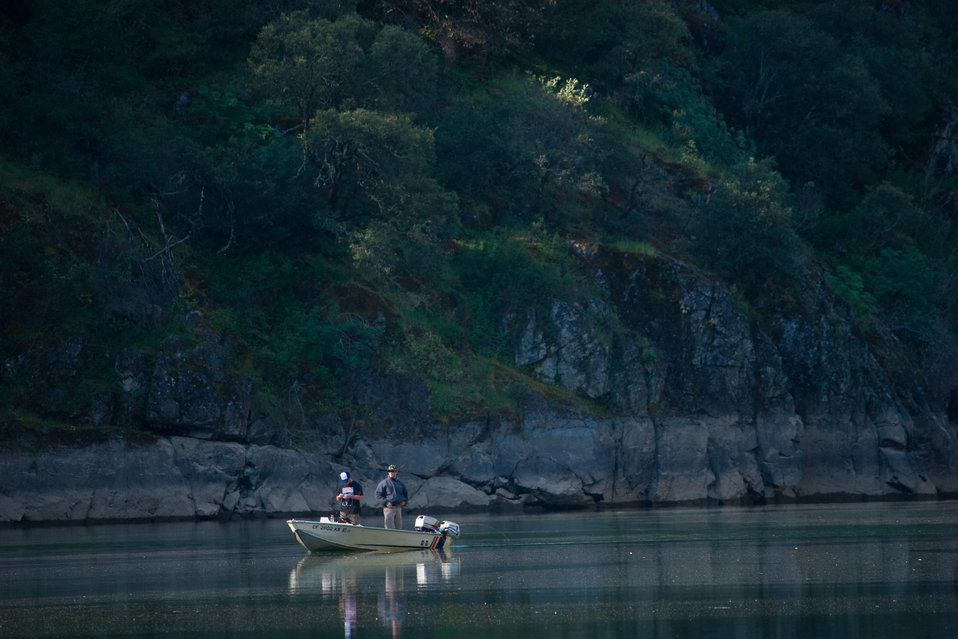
Englebright Lake

Boating, fishing and boat-in camping are some of the recreational opportunities at Englebright Lake near Marysville, Calif., shown on April 22, 2009. Formed by Englebright Dam the lake is 9 miles long with a surface area of 815 acres, an elevation of 527 feet and 24 miles of shoreline. Completed by the U.S. Army Corps of Engineers Sacramento District in 1941, the dam was authorized by Congress for the storage of hydraulic gold mining debris on the Yuba River. The concrete arch dam spans 1,142 feet across and is 260 feet high. The lake and dam are managed by the Sacramento District.